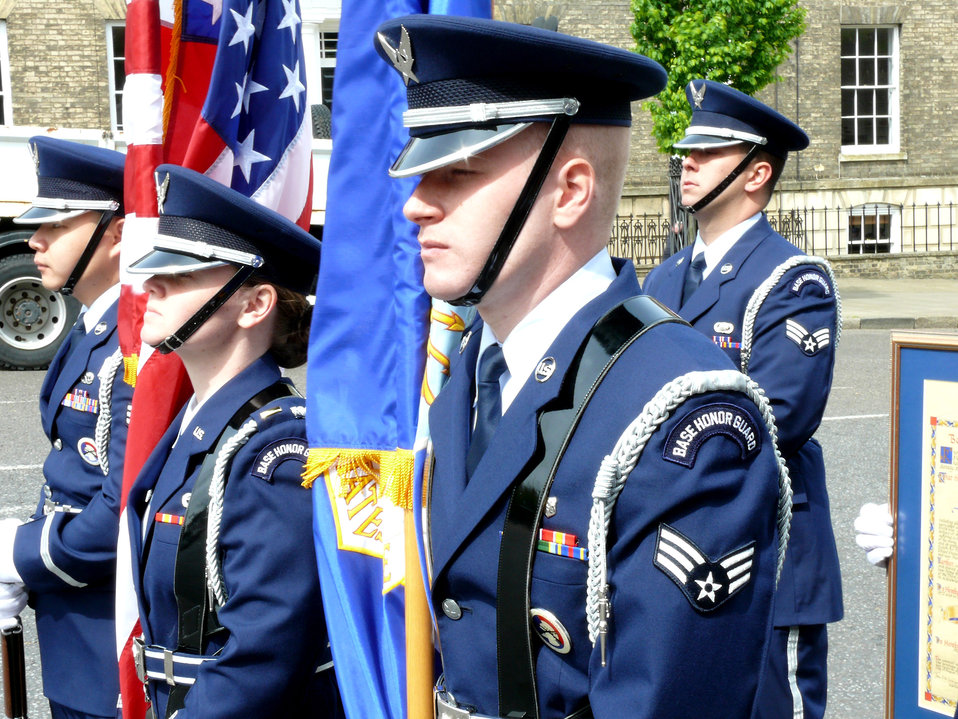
Airmen in UK celebrate Jamestown's 400th with Brit citizens

Second Lt. Kelly Collier (center) holds the American flag, as Senior Airman Daniel Anderson (right) holds the Air Force flag during the America 400 parade May 8 in Bury St. Edmunds, United Kingdom. The celebration is in remembrance of the 400th Anniversary of Jamestown, Va., the first permanent English settlement in America.